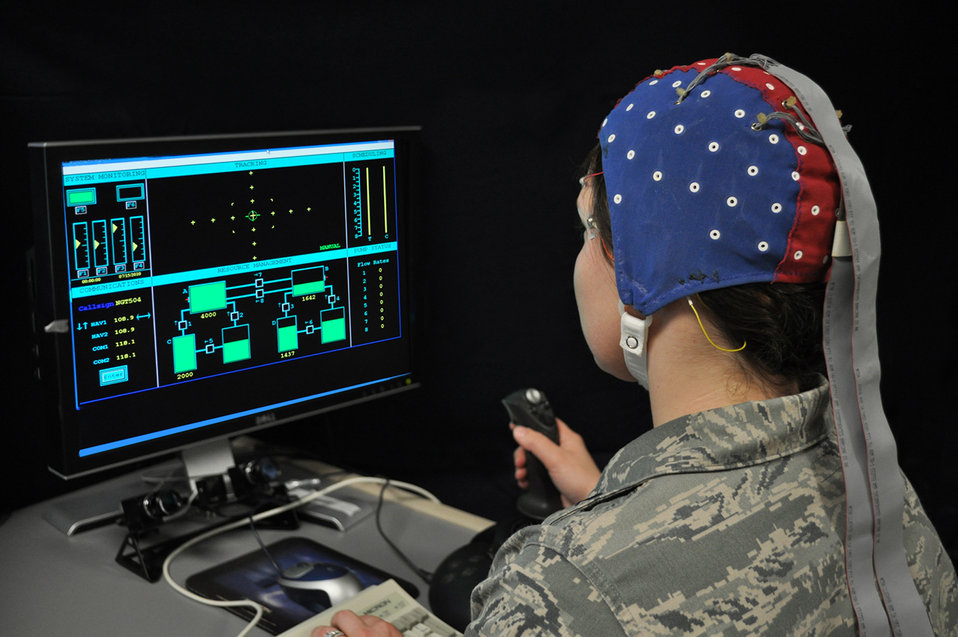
Air Force's 'Technology Horizons' makes science fiction a reality

An Airman demonstrates augmentation of human performance through brainwave technology.